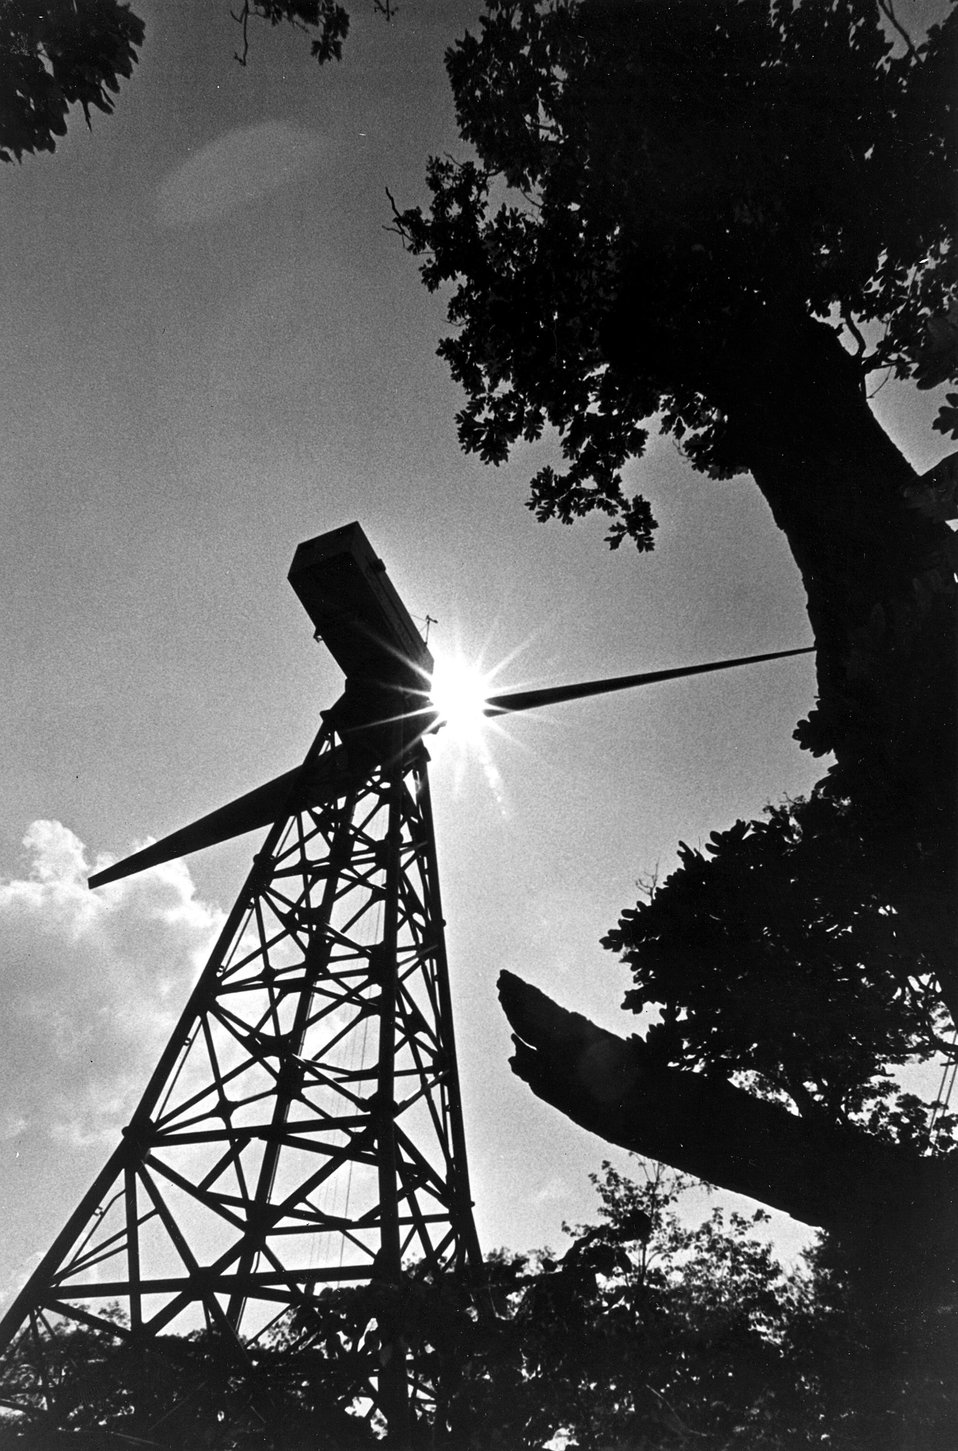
World's Largest Wind Turbine Being Tested In North Carolina. On July 11, 1979, the world's largest wind turbine generator with blades as long as the wingspan of a Boeing 707 was dedicated near Boone, North Carolina. c. 1979